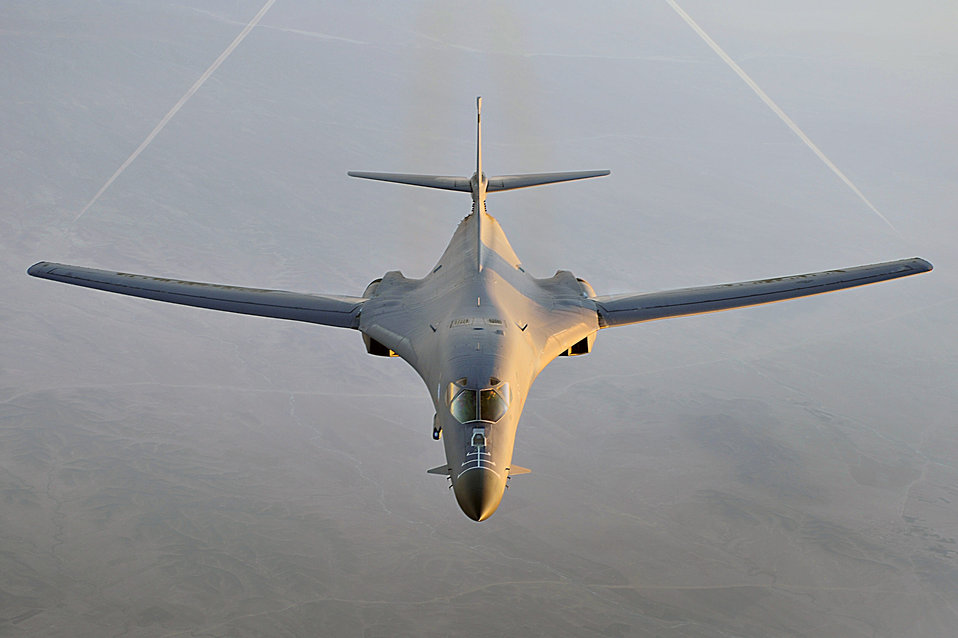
Airpower summary: B-1B deters enemy attacks

A B-1B Lancer flies a combat patrol over Afghanistan in support of Operation Enduring Freedom. The B-1B has the capability to carry guided and unguided weapons and deliver massive quantities of precision and non-precision weapons against specific targets.